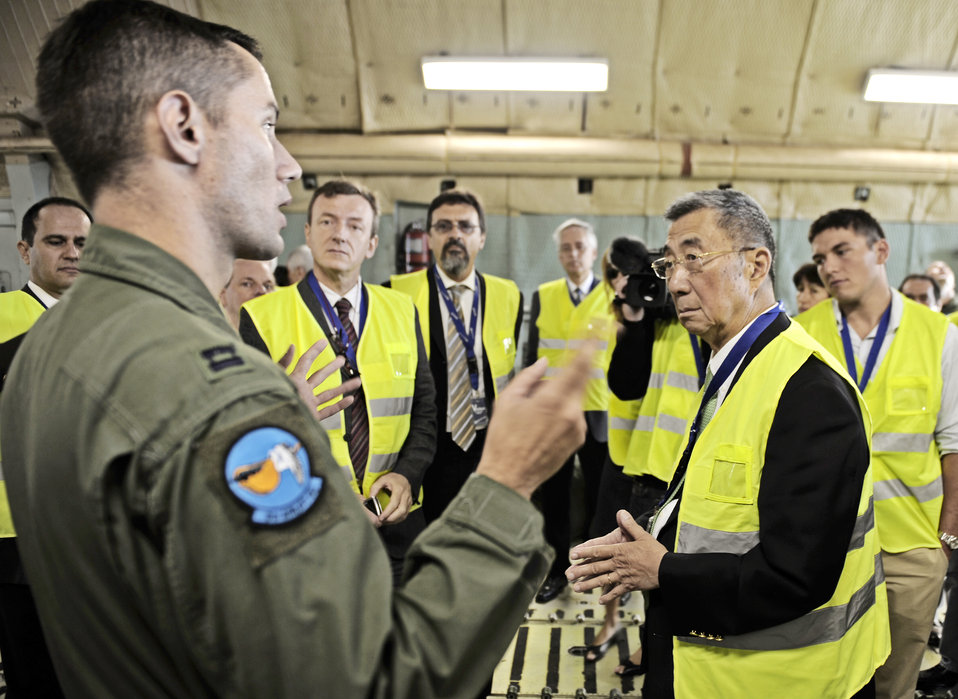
AMC Moves AMS

Capt. Cory Damon speaks to Dr. Samuel Ting (right) and other scientists and engineers Aug. 25, 2010, in Geneva, Switzerland, about the C-5M and how it is the perfect choice for transporting the Alpha Magnetic Spectrometer. An Air Mobility Command crew delivered the $2 billion AMS from Geneva, Switzerland to Cape Canaveral, Fla. The AMS is designed to detect particles in outer space and is scheduled to be delivered to the International Space Station by a NASA space shuttle. Captain Damon is a 9th Airlift Squadron C-5M Super Galaxy pilot.